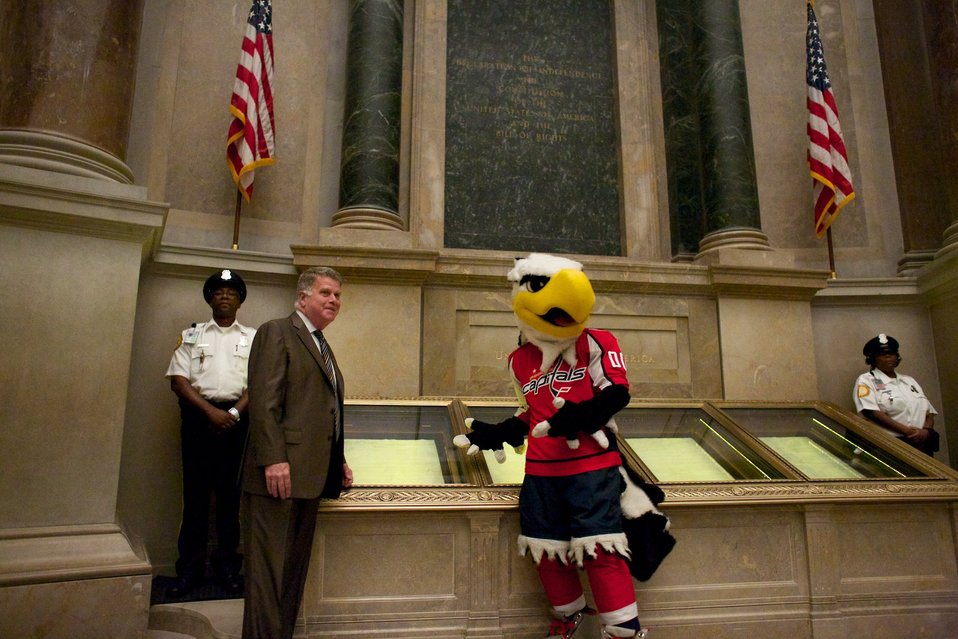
Washington Capitals mascot Slapshot visits the National Archives